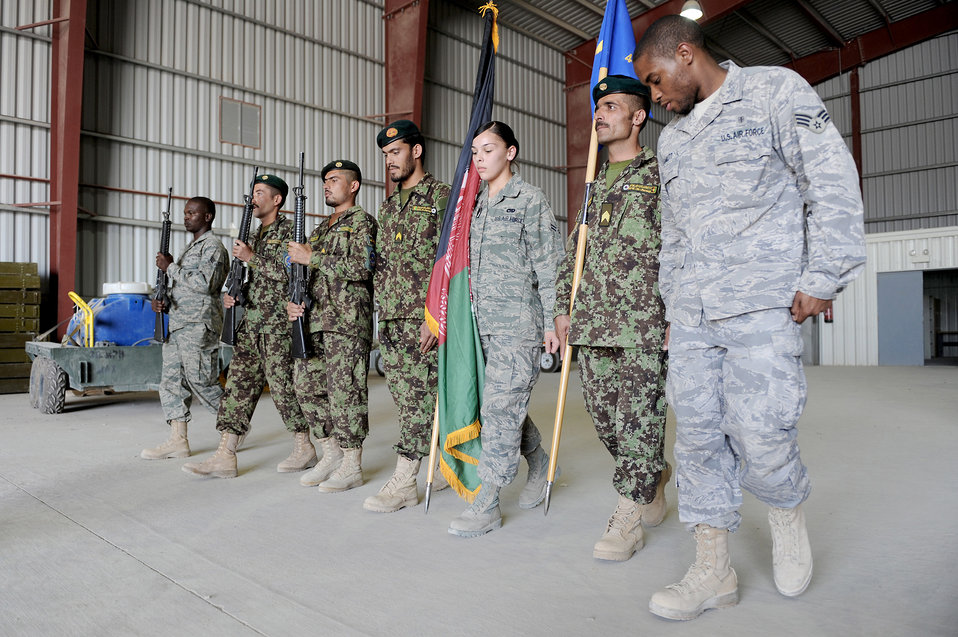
Afghan honor guard

Airmen from the 451st Air Expeditionary Wing Honor Guard and Afghan airmen practice marching Oct. 3, 2010, at Kandahar Airfield, Afghanistan. The 451st AEW Honor Guard members worked with the Afghans to help them prepare their own honor guard for a ceremony marking the one year anniversary of the Kandahar Air Wing.